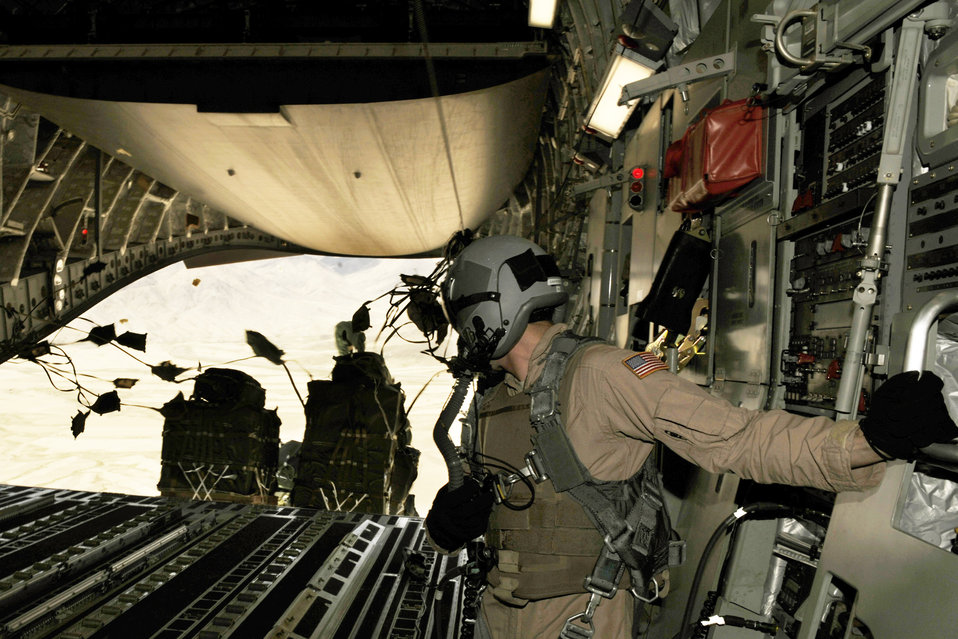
Airmen deliver 1 million pounds of supplies in 42 days

Senior Airman Rory Nowosielski stands on the ramp as container delivery system bundles exit the aircraft during a high-altitude airdrop mission in a C-17 Globemaster III Feb. 14 over Afghanistan. Airman Nowosielski is a C-17 loadmaster with the 816th Expeditionary Airlift Squadron.